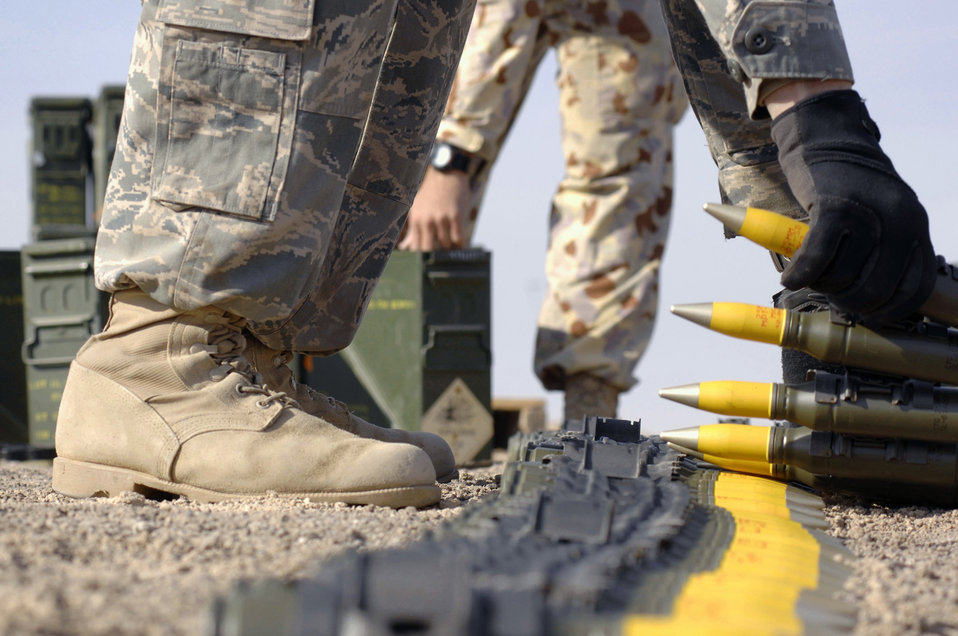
U.S. Air Force and Australian EOD have a blast

Senior Airman Charles Howell handles ammunition that is set to be destroyed during a controlled detonation with coalition forces from the Australian Army Force Level Logistic Asset Jan. 18 at an explosive ordnance disposal range in Southwest Asia. The controlled detonation is used to destroy unserviceable munitions. Airman Howell is with the 386th Expeditionary Civil Engineer Squadron Explosive Ordnance Disposal Flight.